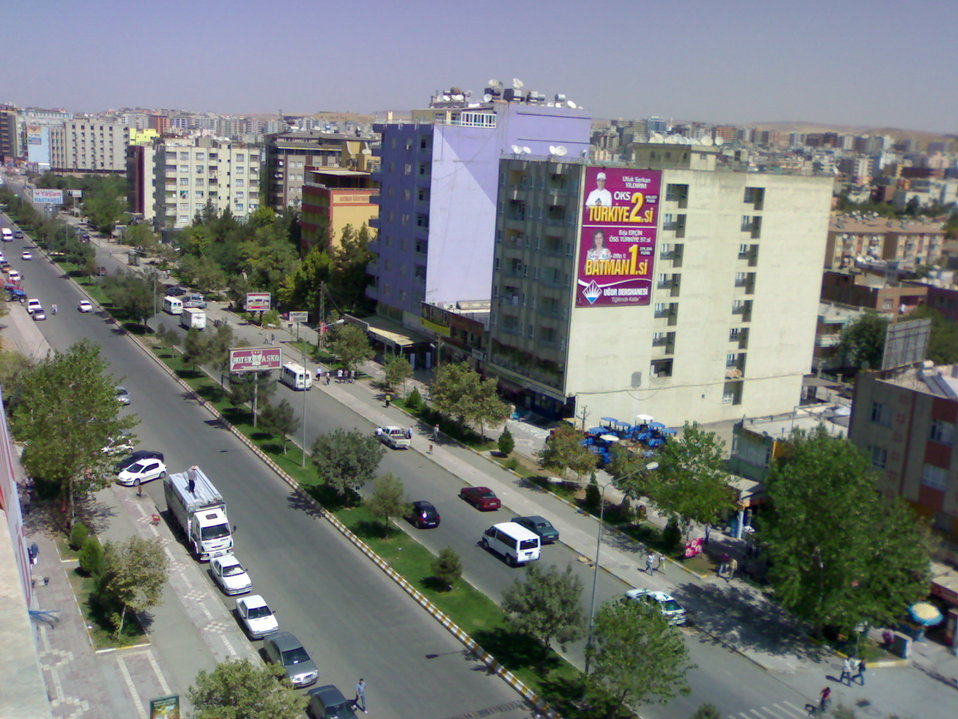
Türkçe: Çekim:Ferhat Fidan Çekim Yeri:Diyarbakır Cd. Turgut Özal Bulvarı Seyrek İşhanı No: 401 / 501 Batman Final Dershanesi